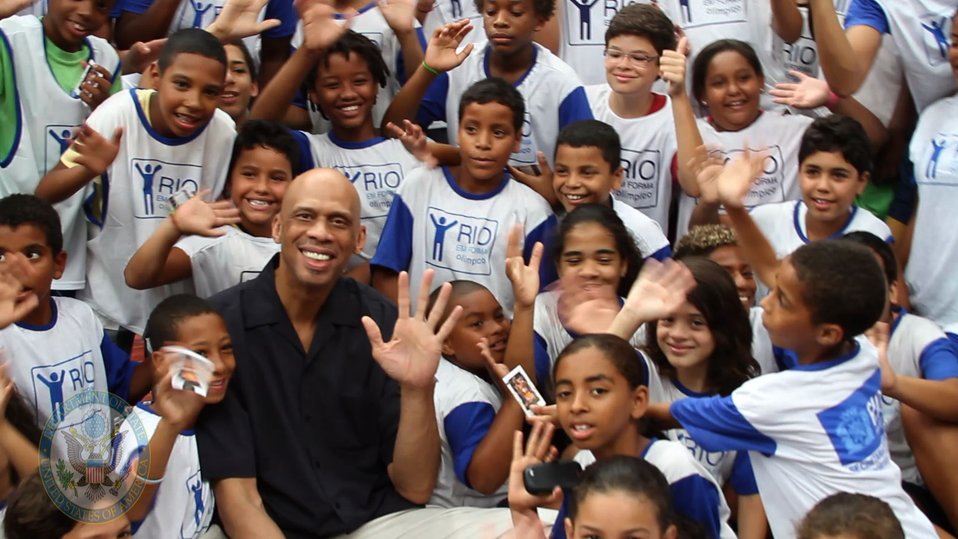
Global Cultural Ambassador Kareem Abdul-Jabbar Poses for a Photo With Young Brazilians

Hall-of-Famer and Global Cultural Ambassador for the U.S. Department of State Kareem Abdul-Jabbar poses for a photo with young Brazilians in Rio de Janeiro, Brazil, on January 26, 2012.